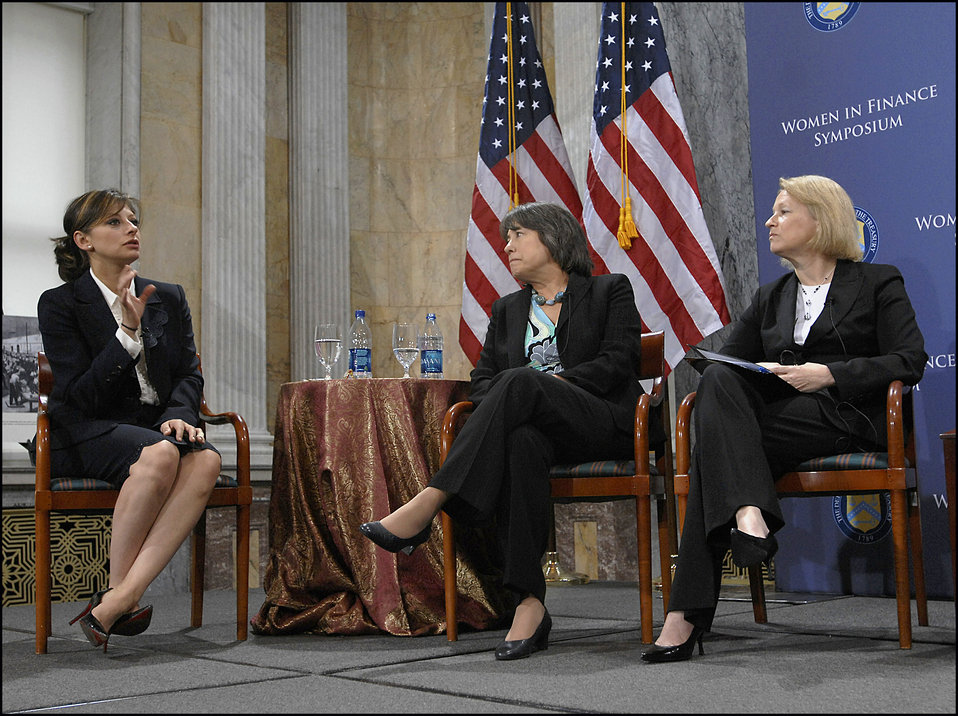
Women in Finance Symposium, 03/29/2010

Maria Bartiromo of CNBC, FDIC Chair Sheila Bair, and SEC Chair Mary Schapiro at the Women in Finance Symposium, March 29, 2010.